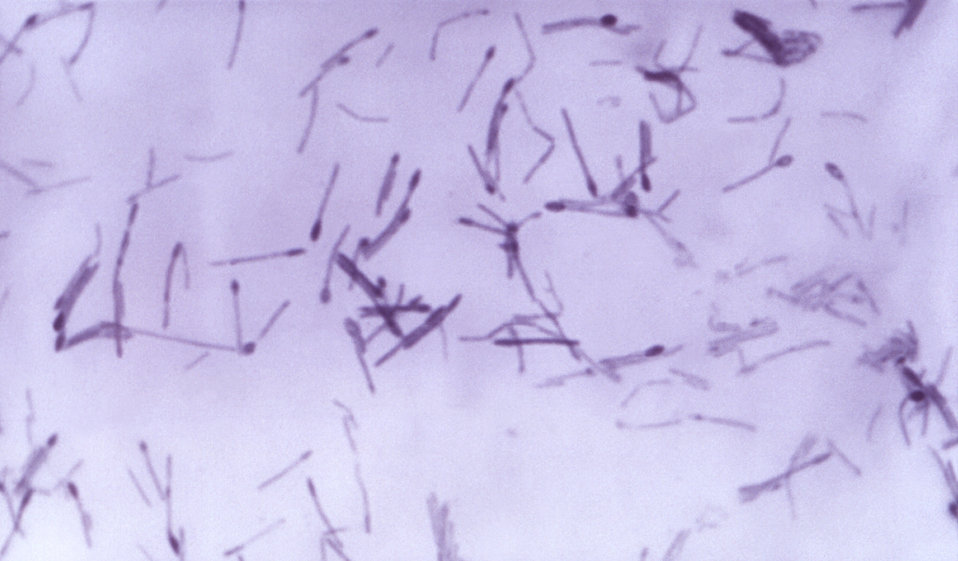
Magnified 956X, this Gram-stained photomicrograph depicted numbers of the Gram-positive Clostridium innocuum bacteria, which had been cultivated in a thioglycollate fluid medium, over a time period of 24 hours. Clostridium is a genus of anaerobic, spore forming bacteria in the family Bacillaceae. Note the terminal spores seen as swellings at the ends of a number of these bacteria.